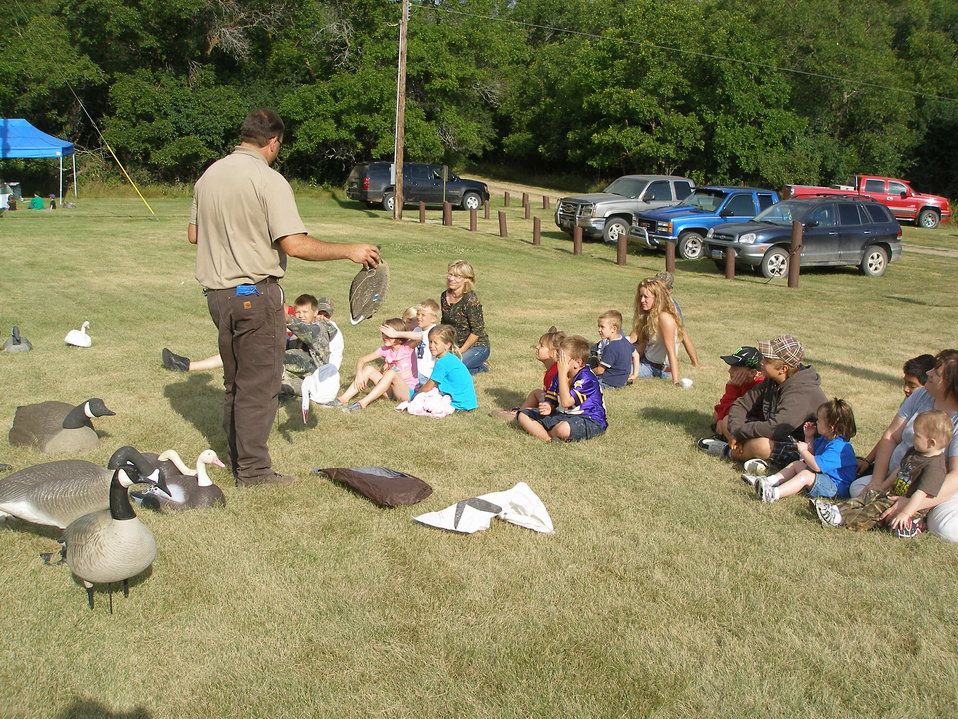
2011 Greenwing Day - Decoy Setup Session

Des Lacs National Wildlife Refuge, Tasker's Coulee

Discussing about the different types of decoys that can be used.